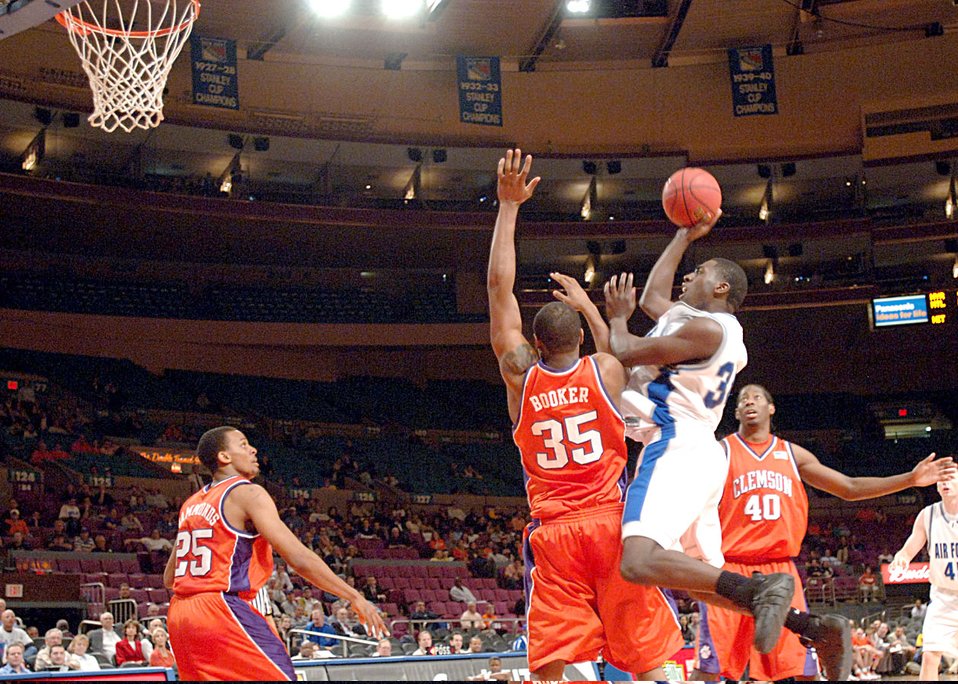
Falcons lose heartbreaker to Clemson in NIT semifinals

Air Force forward Dan Nwaelele hits a jumper over Clemson center Trevor Booker during the National Invitation Tournament semifinal game against Clemson March 27 at Madison Square Garden. Clemson survived a rally by the Falcons in the final minutes to win 68-67 and advance to the NIT championship March 29 against West Virginia.